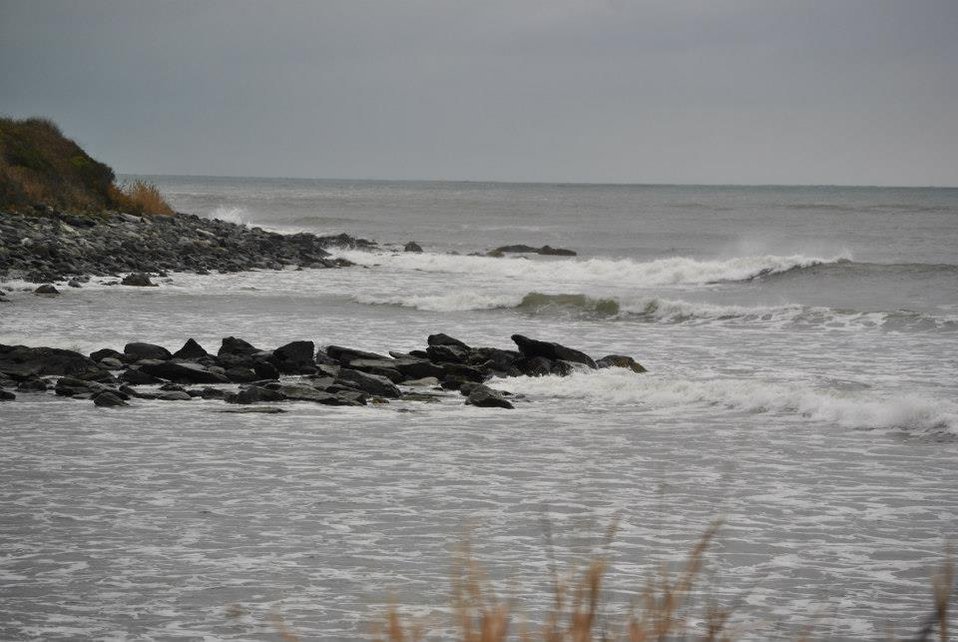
Sachuest Point National Wildlife Refuge- Oct. 28 (RI)

Tide coming into Sachuest Point during Sandy - Sunday, 10/28